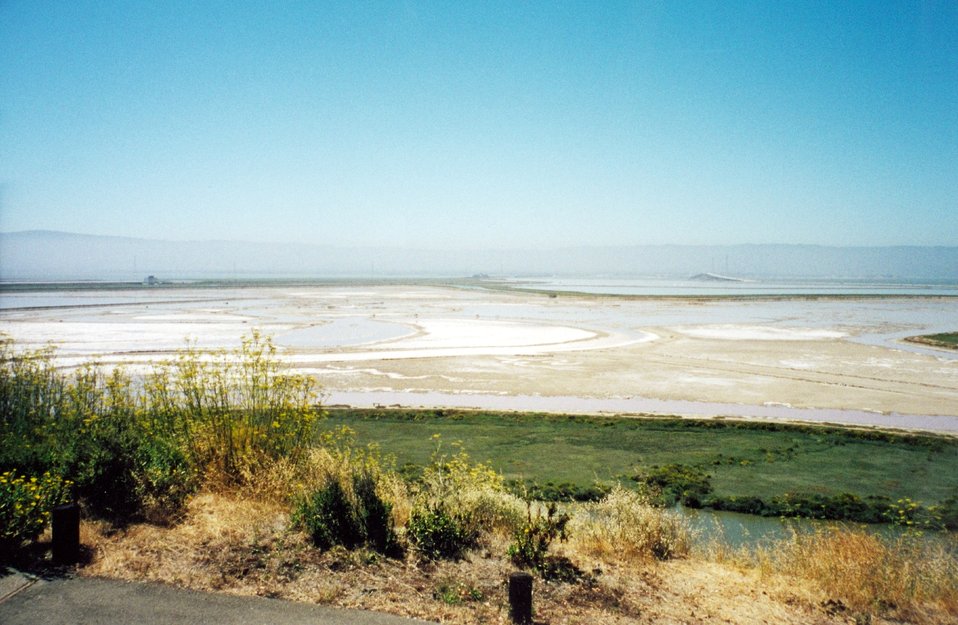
Salt flats at the south end of San Francisco Bay as seen from the Redwood City area.